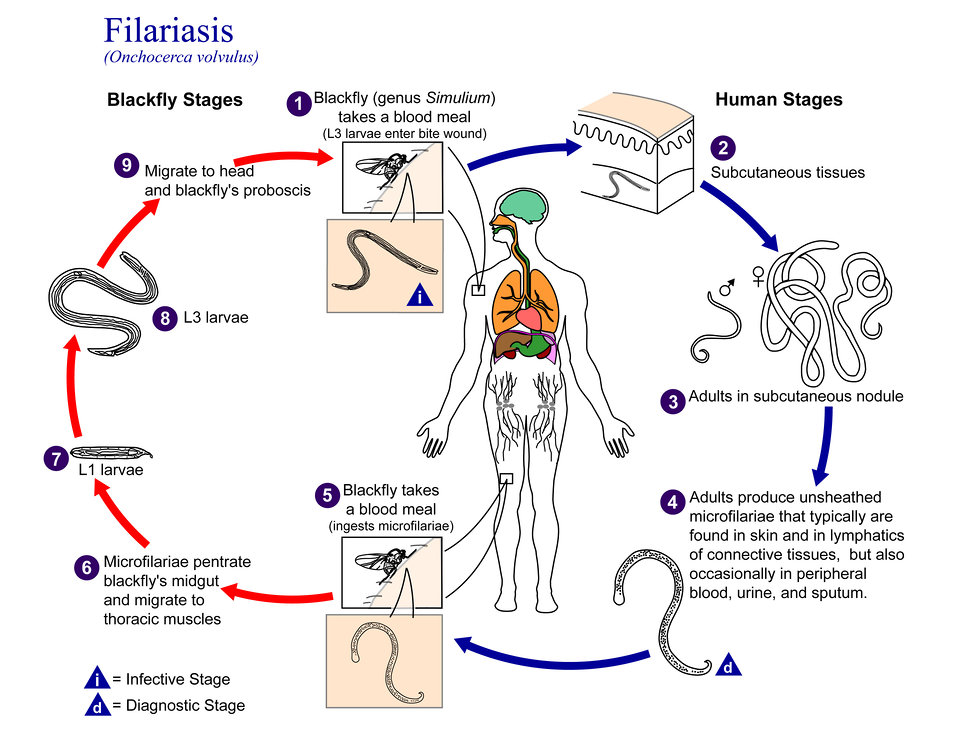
This is an illustration of the life cycle of Onchocerca volvulus, one of the causal agents of Filariasis.